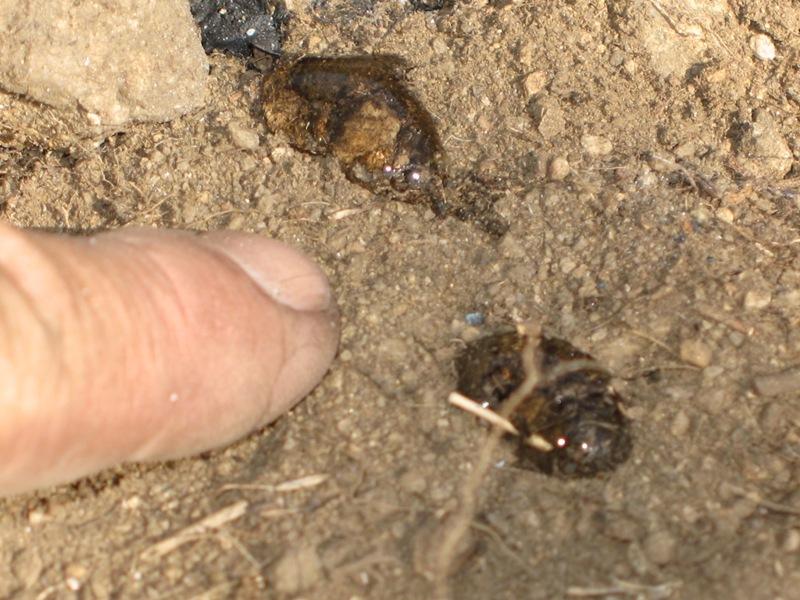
This is an example of soil water repellency damage from the Rim Fire. Soil water repellency (hydrophobicity) reduces the affinity of soils to absorb moisture, which has detrimental and often costly implications for plant growth. Water repellency includes the reduced infiltration capacity of soils, enhanced overland flow and accelerated soil erosion, uneven wetting patterns, development of preferential flow and the accelerated leaching of agrichemicals. BAER is a rapid assessment of burned watersheds by a BAER team to identify imminent post-wildfire threats to human life and safety property and critical natural or cultural resources on National Forest System lands and take immediate actions to implement emergency stabilization measures before the first major storms. Fires result in loss of vegetation exposure of soil to erosion and increased water runoff that may lead to flooding increased sediment debris flows and damage to critical natural and cultural resources. BAER team members implement seeding and mulching installation to prevent erosion, erect temporary water run-off control structures that will protect recovering areas, and installation of warning signs, replace safety related facilities, remove safety hazards, prevent permanent loss of habitat for threatened and endangered species, and prevent the spread of noxious weeds and protect critical cultural resources. The Rim Fire in the Stanislaus National Forest near in California began on Aug. 17, 2013 and is under investigation. The fire has consumed approximately 256,169 acres and is 84% contained.